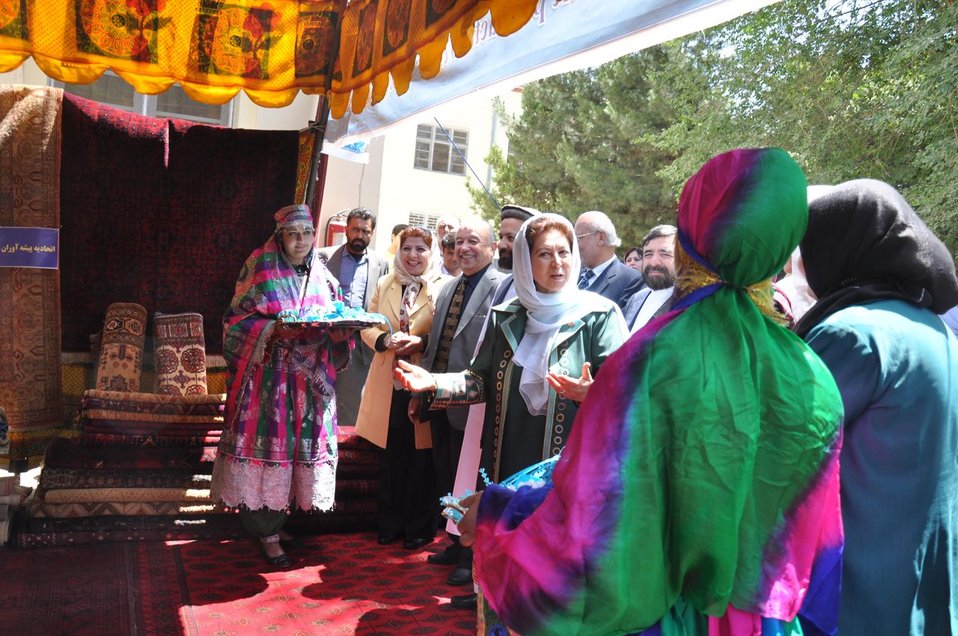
Mother's Day in Afghanistan

Minister Ghazanfar explains how important it is for the women of Afghanistan to make a living from their crafts and wares.